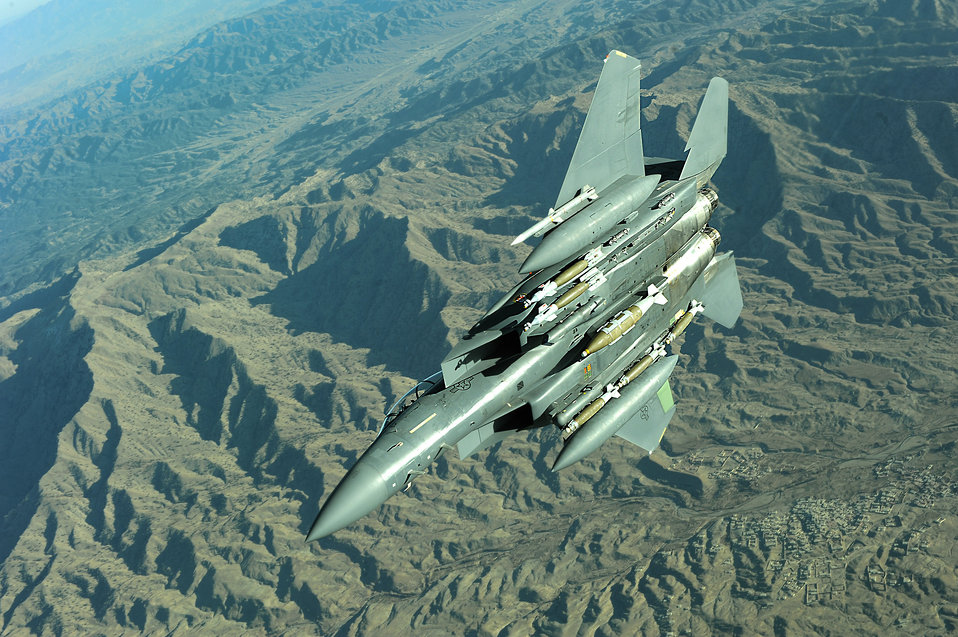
Dec. 14 airpower summary: F-15Es flies combat patrol mission

An F-15E Strike Eagle flies a combat patrol mission over Afghanistan recently. The F-15E is from the 391st Expeditionary Fighter Squadron at Bagram Airfield, Afghanistan.